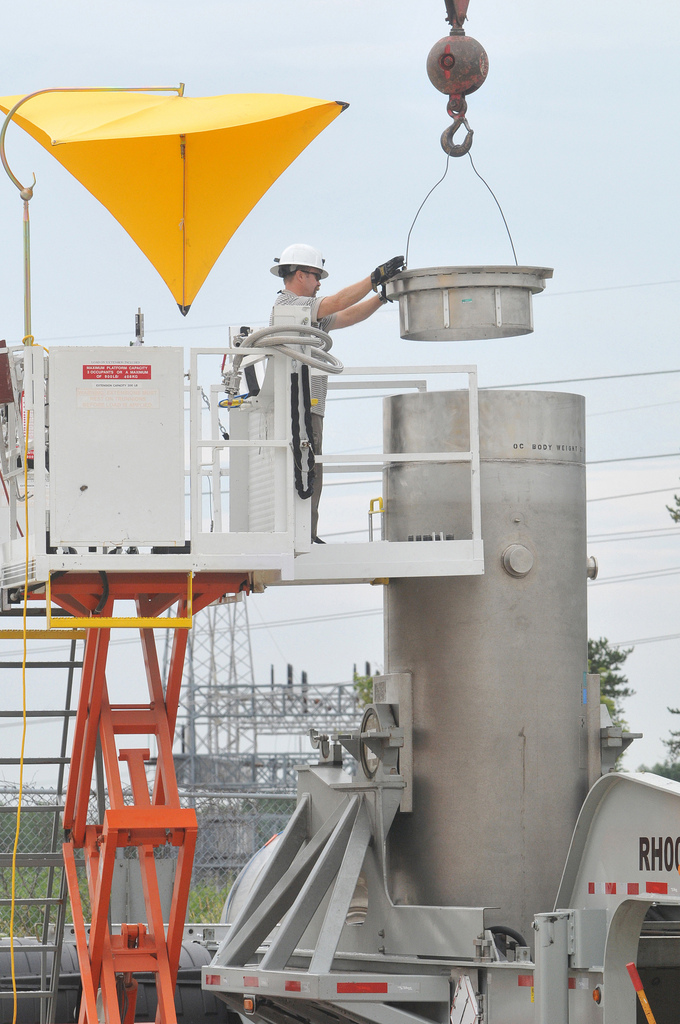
Workers load RH TRU drums into an RLC container which will be transported to the Waste Isolation Pilot Plant (WIPP) for disposal.

The Next-Phase Transuranic Waste Project is squarely focused on reducing the quality of transuranic waste currently housed at Argonne. Removal of this material supports Argonne's overall goal of reducing its nuclear footprint. The project accelerates work that has already begun by providing additional resources to drive projects across the site.